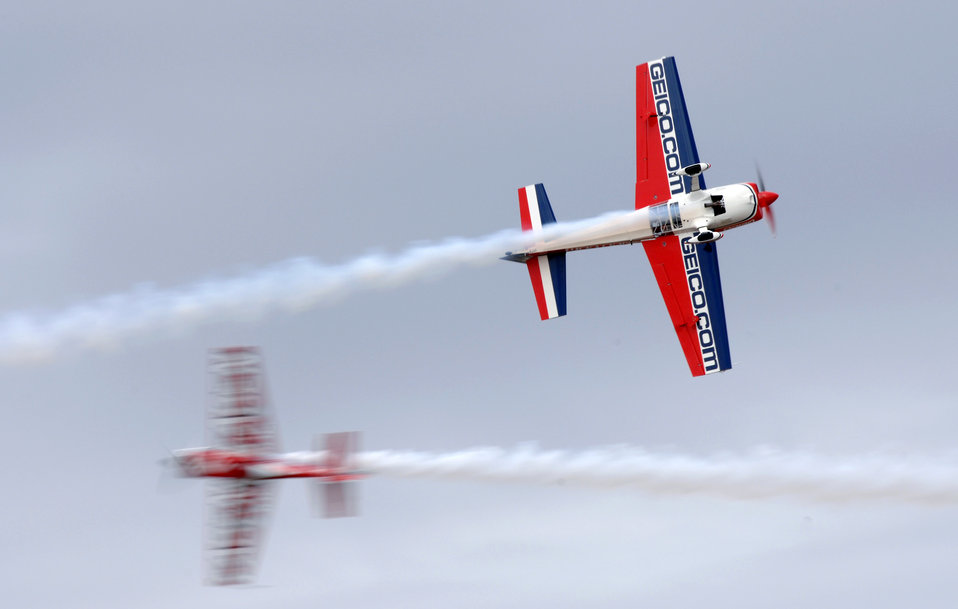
Air Force Week

Two civilian aircraft perform a dual arial demonstration during